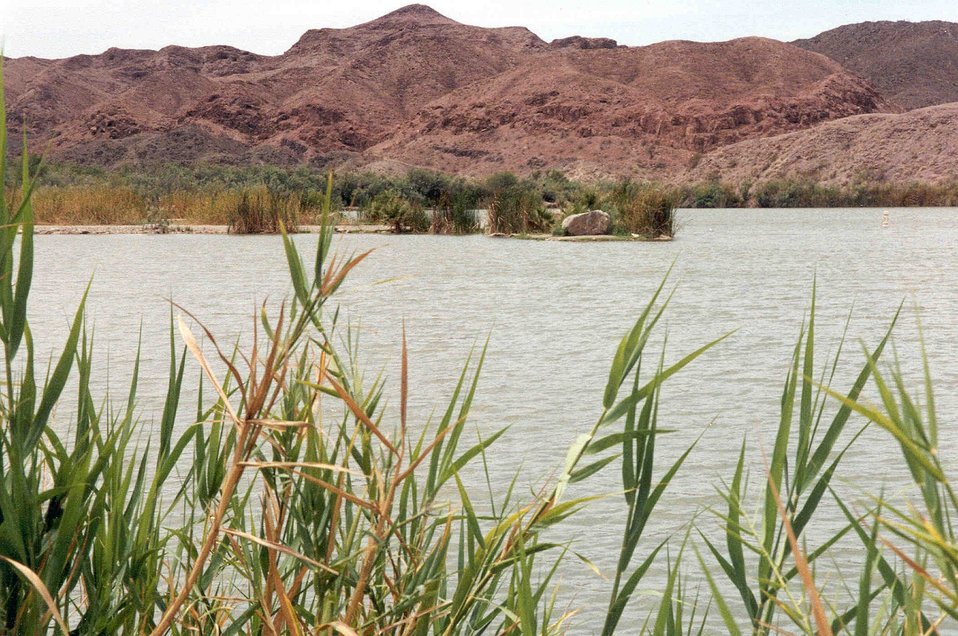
A beautiful peaceful morning at Mittry Lake